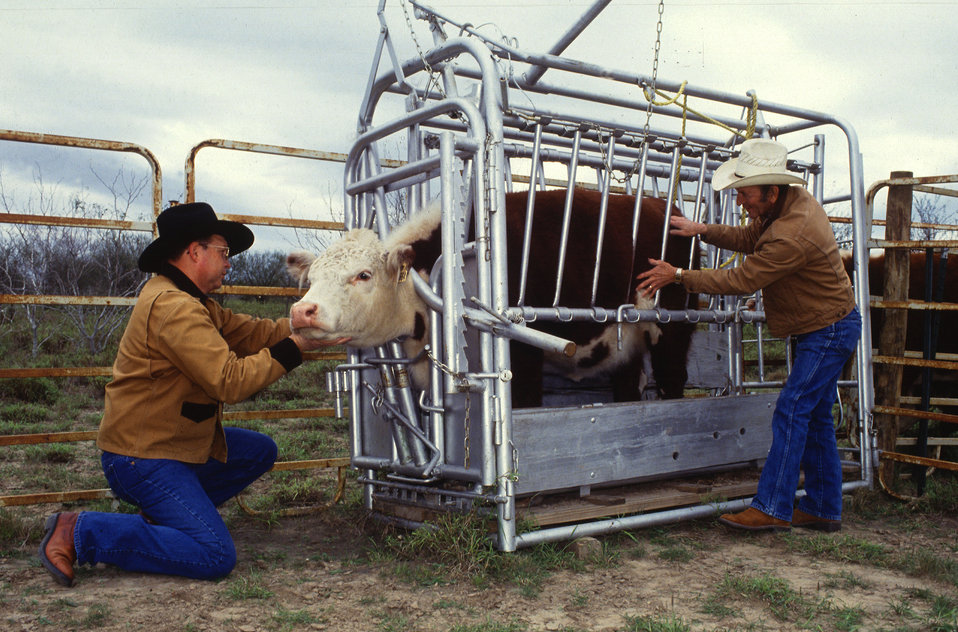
U.S. Department of Agriculture (USDA) Agricultural Research Service (ARS) entomologist Elmer Ahrens and animal caretaker Adolfo Pena inspect for cattle fever ticks.